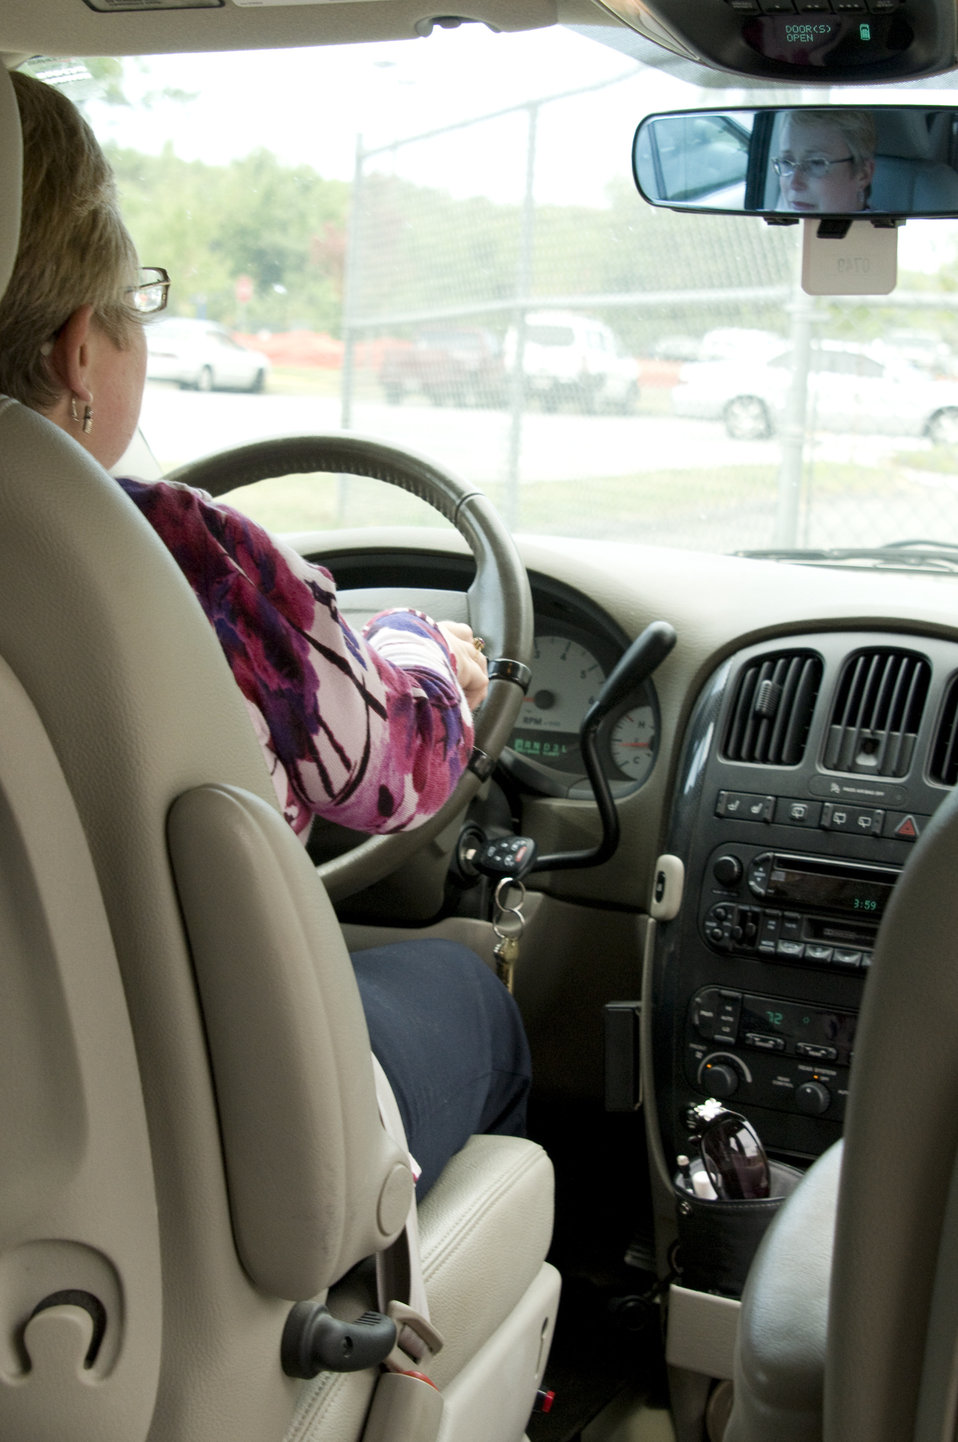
Viewed from the back seat, the woman pictured here, had just boarded her vehicle by way of an access rampwhile seated in her wheelchair, and had maneuvered herself into the driver's-side swivel seat. Due to her disability, the steering wheel was equipped with a hand control, which she held in her right hand, enabling her to operate the accelerator and braking system using her hand rather than her feet.